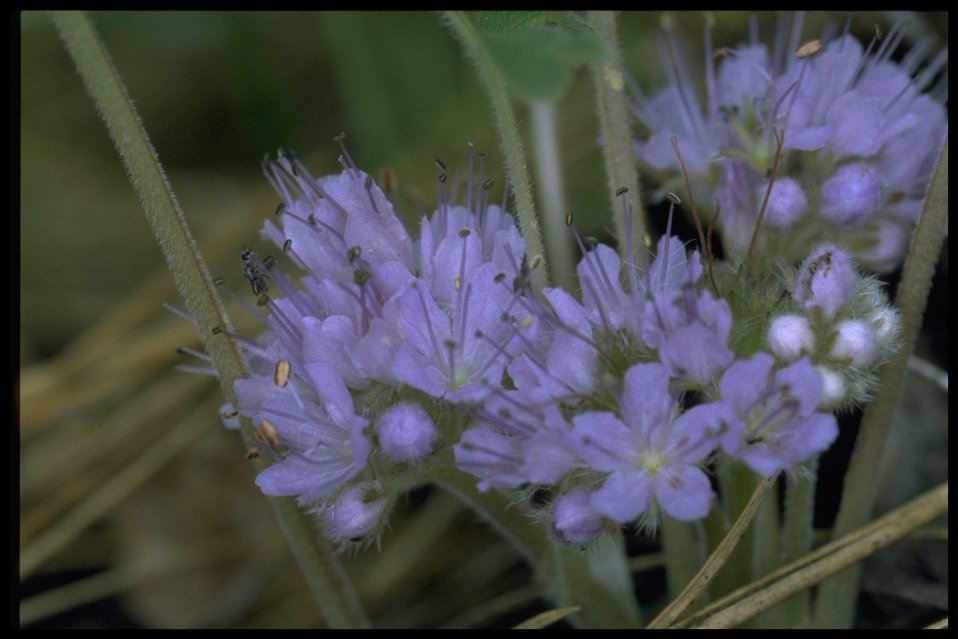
Closeup shot of ballhead waterleaf (Hydrophyllum capitatum var. capitatum).